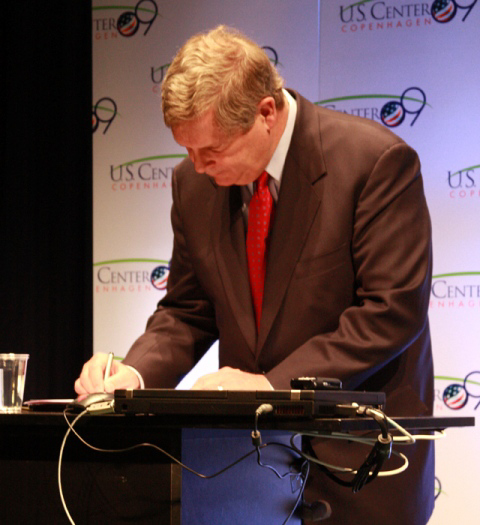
U.S. Secretary of Agriculture Signs MOU at COP-15

U.S. Secretary of Agriculture Tom Vilsack signs memorandum of understanding during COP15 (Conference of the Parties to the UN Framework Convention on Climate Change) in Copenhagen, Denmark December 15, 2009.